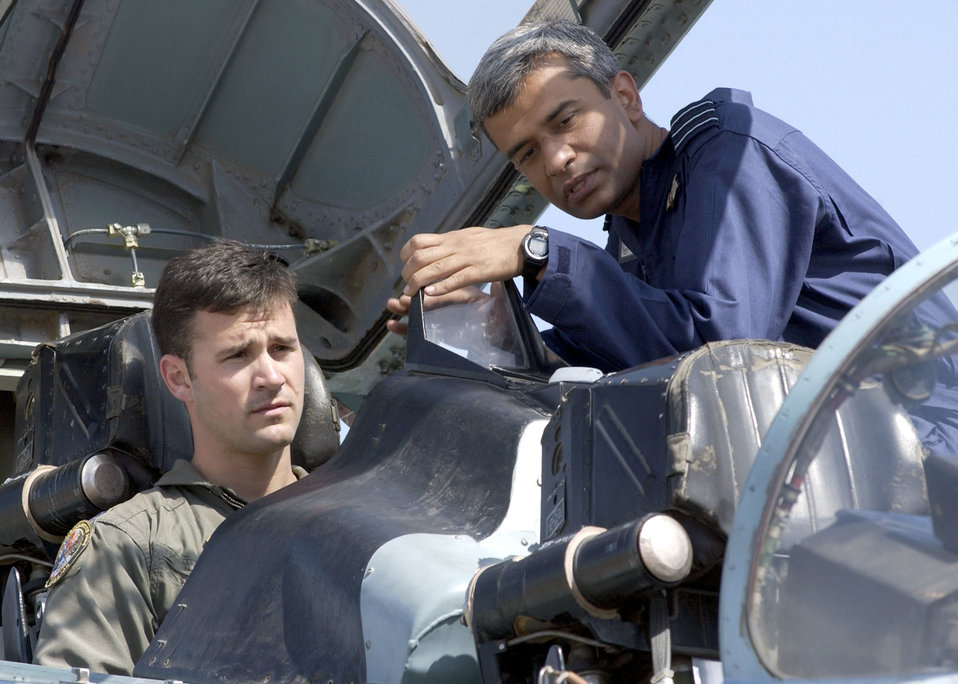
Cope India in full force

GWALIOR AIR FORCE STATION, India -- Indian air force Wing Commander U. Rakhura prepares Capt. Pete Fesler for an SU-30K Flanker flight during Cope India '04. The exercise is the first dissimilar air combat training exercise between the air forces of the United States and India in more than 40 years. Captain Fesler, one of the first U.S. Air Force pilots to fly in a Flanker, is an F-15 Eagle aviator from Elmendorf Air Force Base, Alaska. The 10-day event ended Feb. 25.